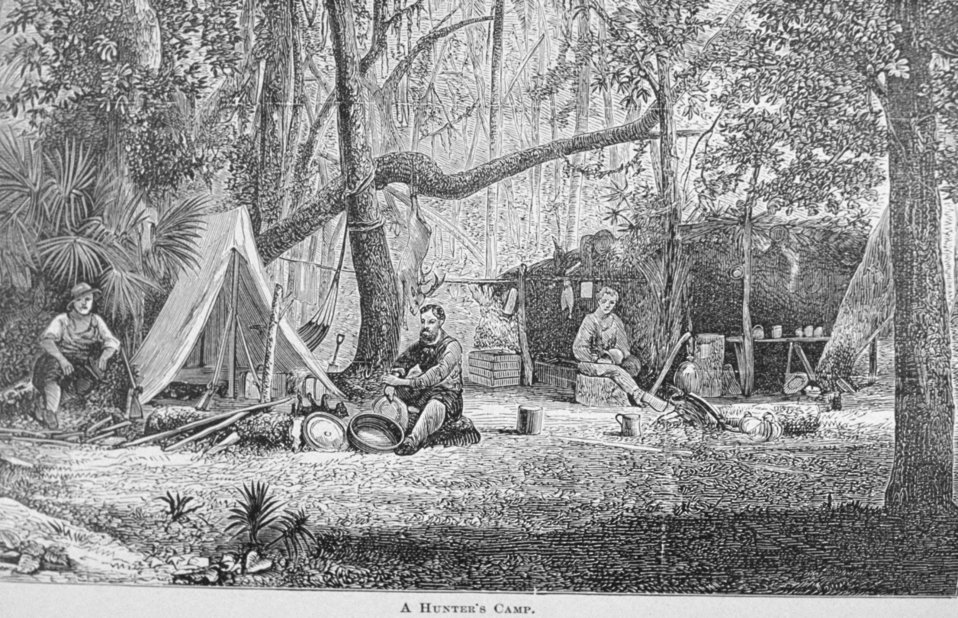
A Hunter's Camp - in 'Florida for Tourists, Invalids, and Settlers' by George M. Barbour, 1881. Library Call No. F316 .B23 1881.